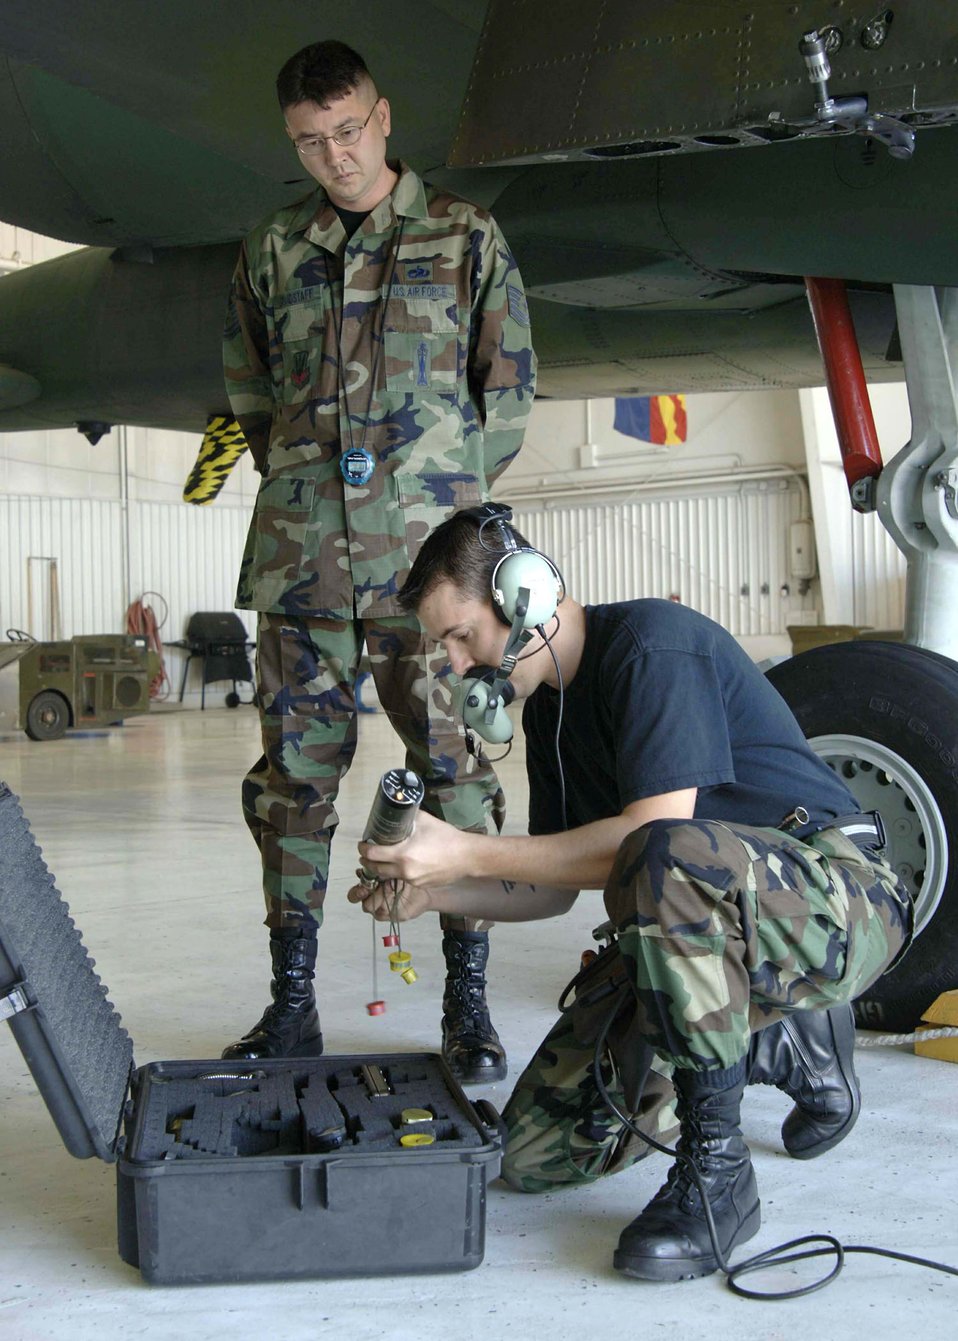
Load crew competition

Tech. Sgt. Thomas Grandstaff evaluates Senior Airman Joseph Harrison during the 355th Wing